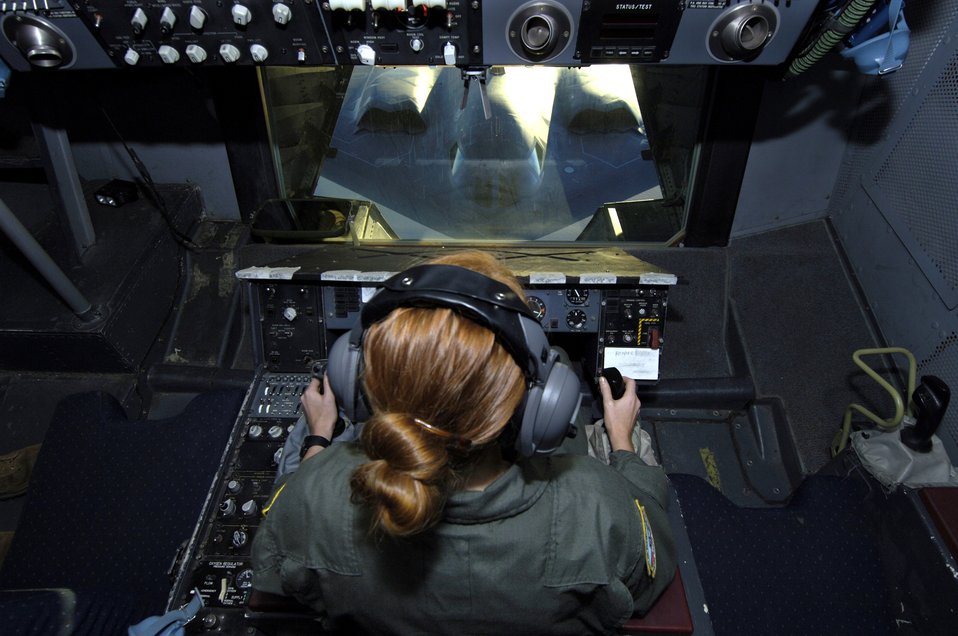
Exercise Green Lightning

Senior Airman Alicia Trudeau refuels a B-2 Spirit from a KC-10 Extender over Australia during exercise Green Lightning on Tuesday, July 25. The KC-10 and B-2 are from the 36th Expeditionary Wing at Guam. The exercise will test U.S. capabilities and provide operational familiarity in the region for the Pacific bomber presence as well as serve to enhance relations with the Australians. Airman Trudeau is deployed from the 78th Air Refueling Squadron at McGuire Air Force Base, N.J.